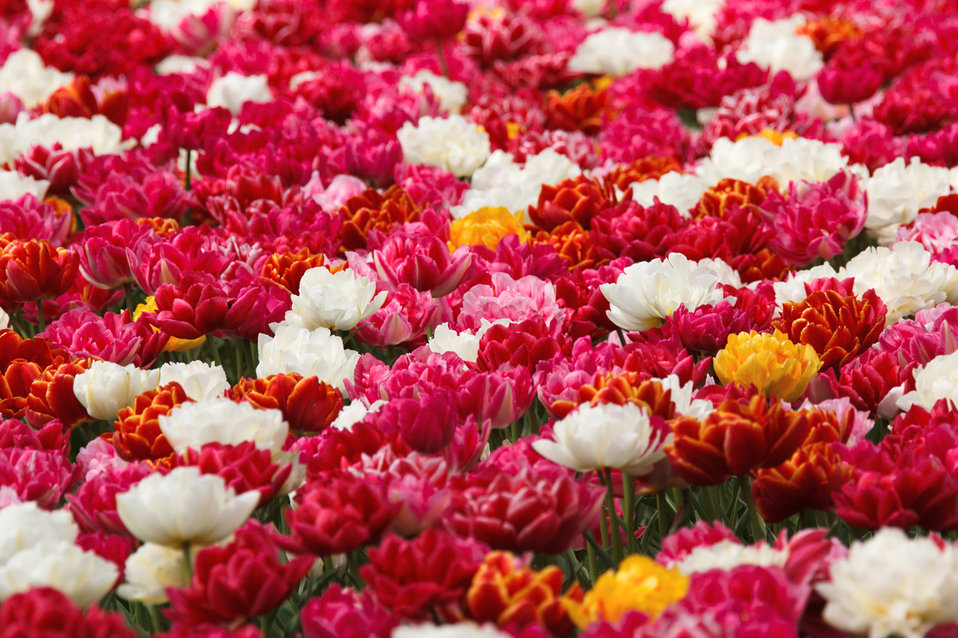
Double tulips

Colorful double tulips background.